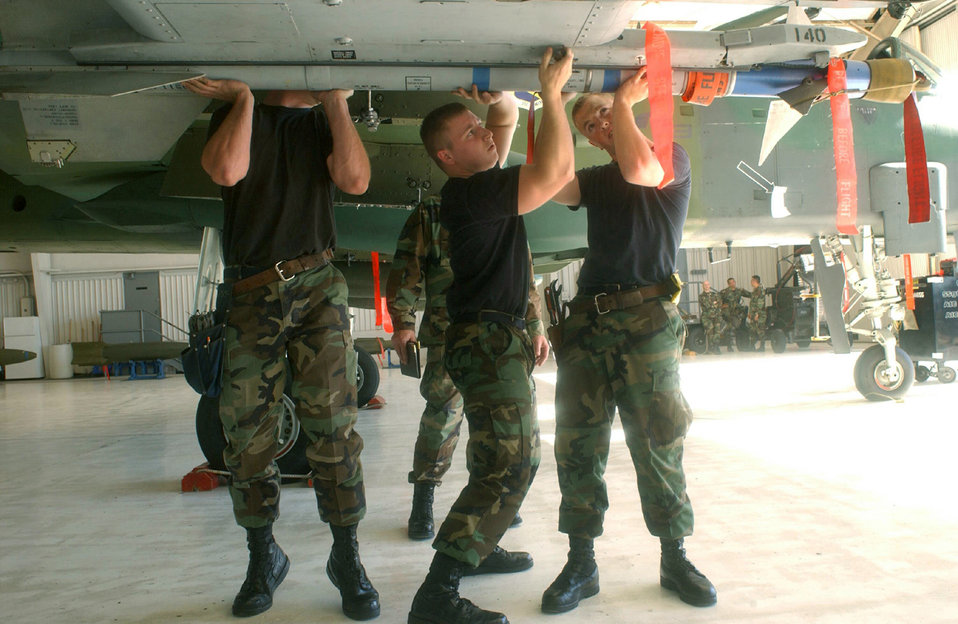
Load lovers

DAVIS-MONTHAN AIR FORCE BASE, Ariz. -- Airman 1st Class Steven Dennison attaches an AIM-9 Sidewinder to a rail on an A-10 Thunderbolt II with help from Staff Sgt. John Halloran (right) and Airman 1st Class Chris Langbehn. They were taking part in a weapons load crew competition here and are assigned to the 355th Aircraft Maintenance Squadron.